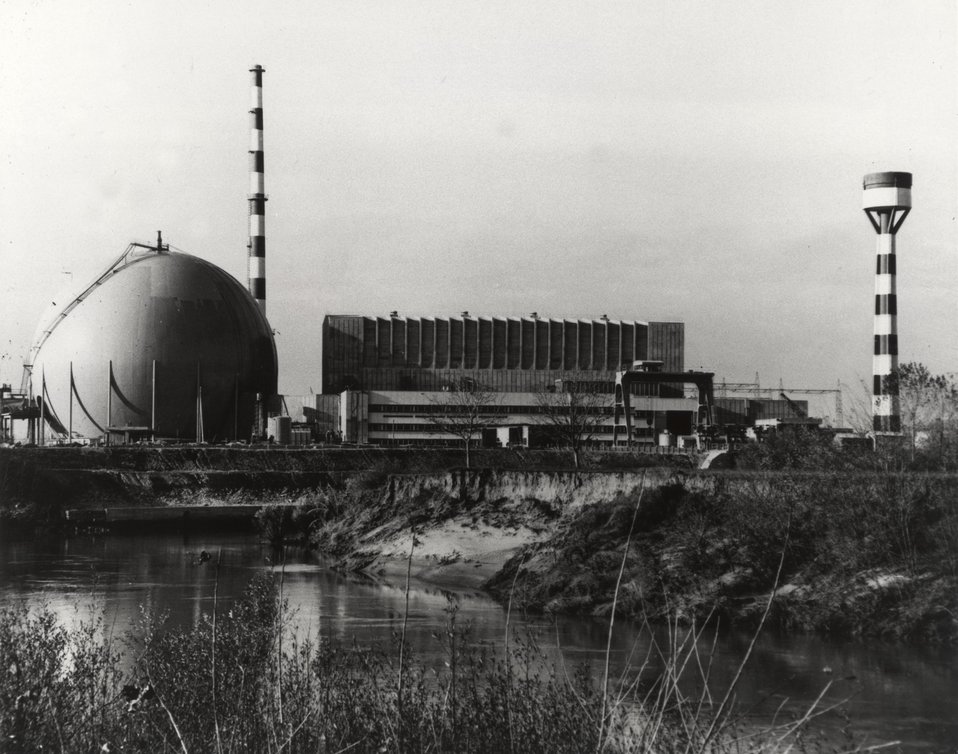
The Italian nuclear power plant SENN (Societa Elettronucleare Nazionale) on the Garigliano near Naples. c. 1967